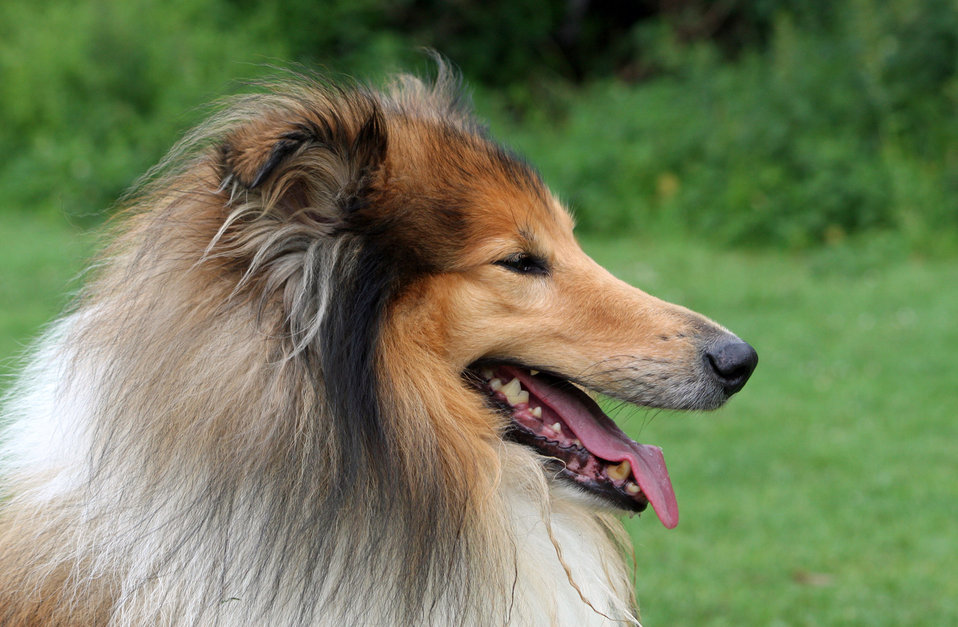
Rough collie dog portrait

Portrait of a beautiful rough collie dog.